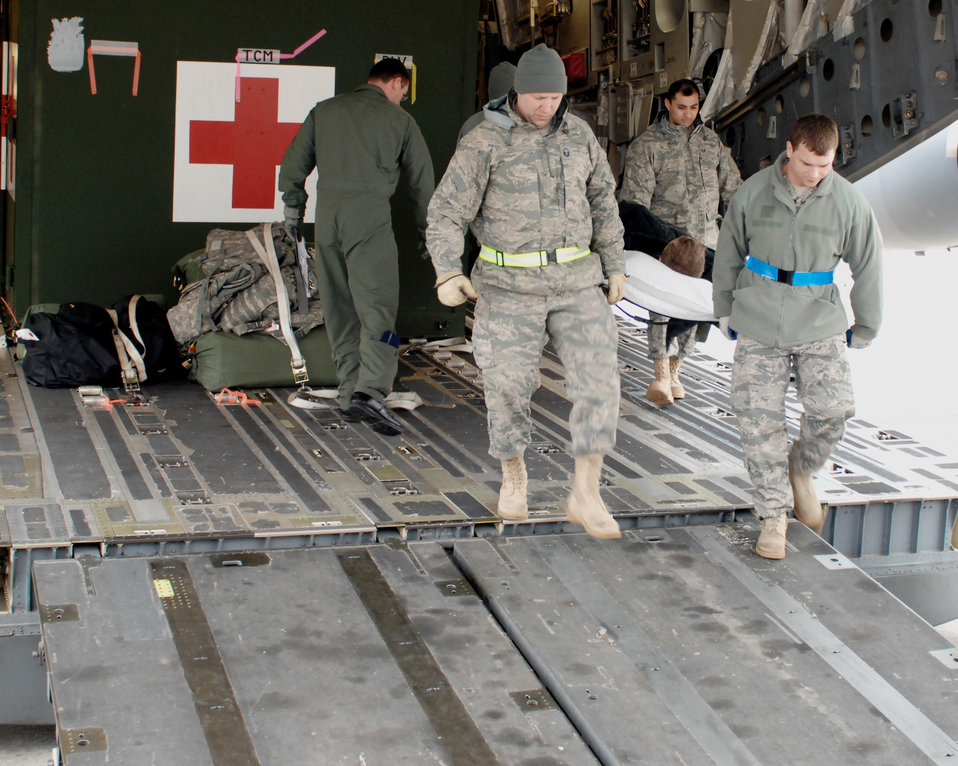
Handle with care

Airmen from the Aeromedical Staging Facility move a patient off an aircraft Feb. 22, 2010, at Scott Air Force Base, Ill. The ASF has experienced a large increase in patients recently as wounded warriors were diverted from Joint Base Andrews, Md., directly to Scott because of record snow fall on the East Coast.